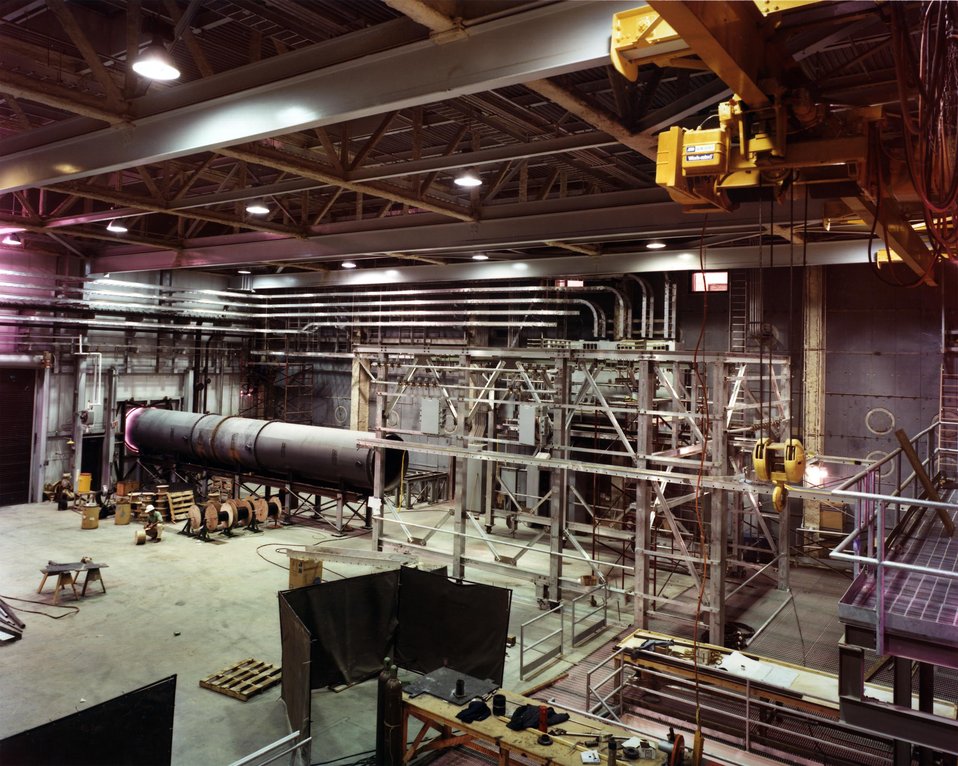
COMPONENT TEST BUILDING (AREA 60).

VIEW OF FUTURE LOCATION OF TRAIN MAGNETS, DIFFUSES, AND HOT EXIT GAS PROCESSING GEAR. THE COMBUSTOR OF TEST TRAIN 1A WILL BURN OIL WITH ASH INJECTION TO SIMULATE THE EFFECTS OF SLAG AND ASH RESULTING FROM USE OF A COAL COMBUSTOR.